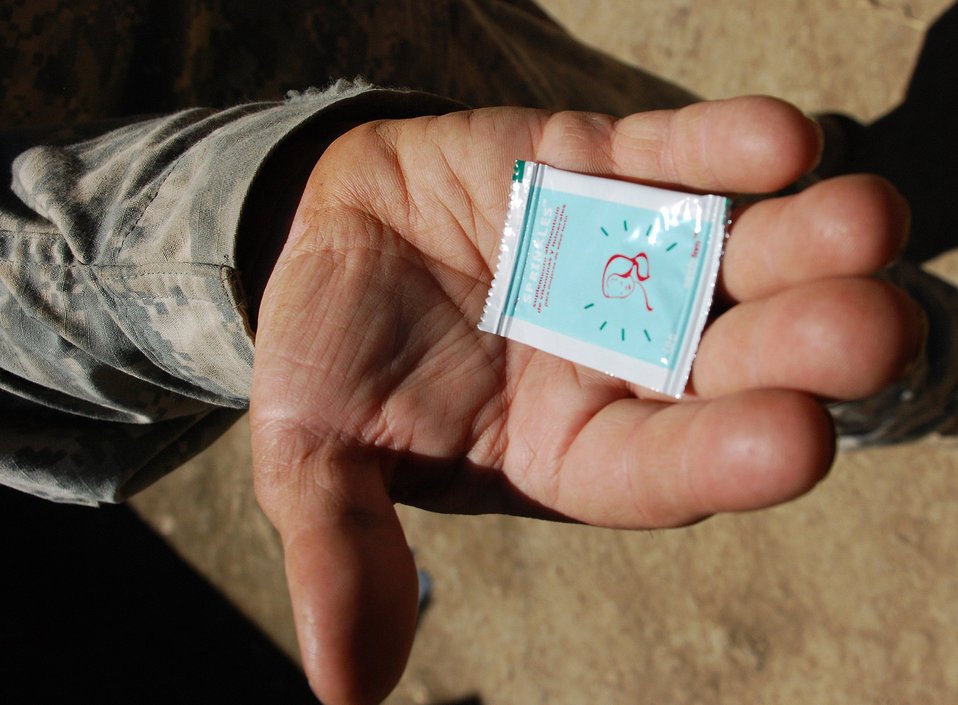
Medical team hikes into Honduran mountains to care for children

A member of the U.S. military medical readiness and training exercise team visiting the remote village of Marcala, Honduras, holds a packet of micronutrients. The team provided these packets to women of child-bearing age to help specialists with the Honduran Ministry of Health determine the health benefits of including the nutrients in the women's diets.